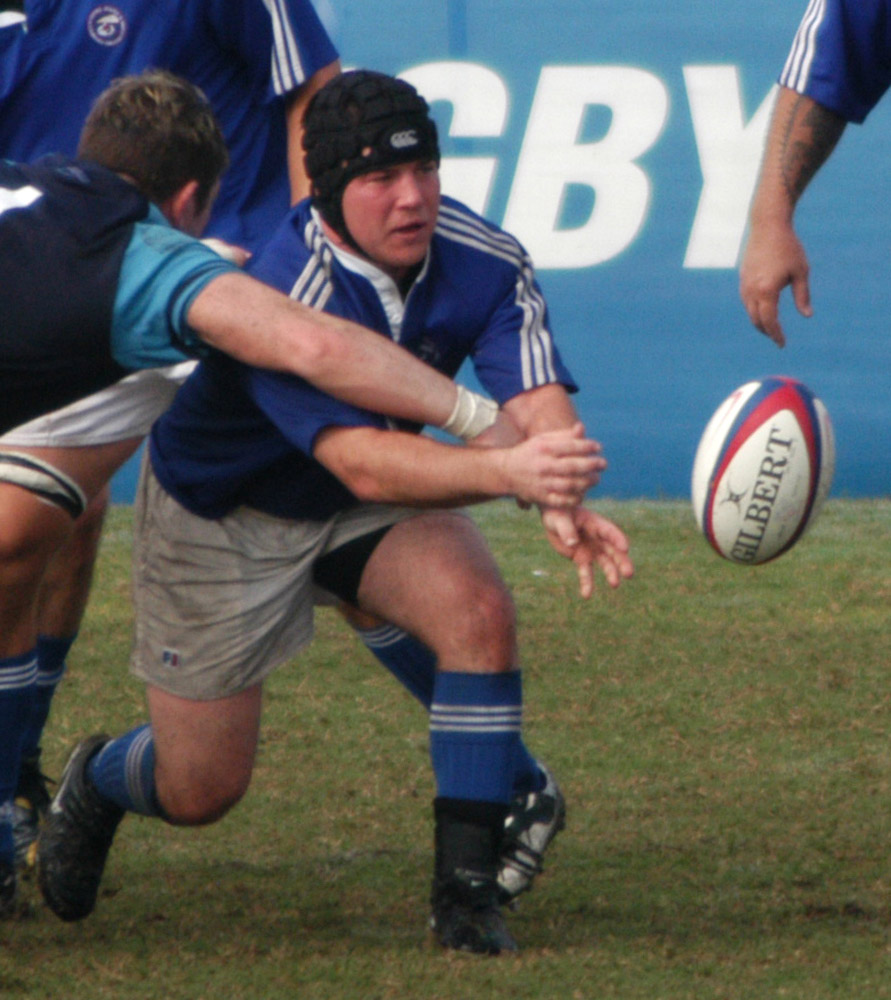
AFSOC Airman readies for rugby's wrath

2nd Lt. Daniel Griffin, 27th Special Operations Civil Engineer Squadron, tries to get his hands on the ball during a rugby game. Lieutenant Griffin is playing on the Air Force rugby team in the upcoming Armed Forces 2007 rugby tournament at Camp Lejeune, N.C.